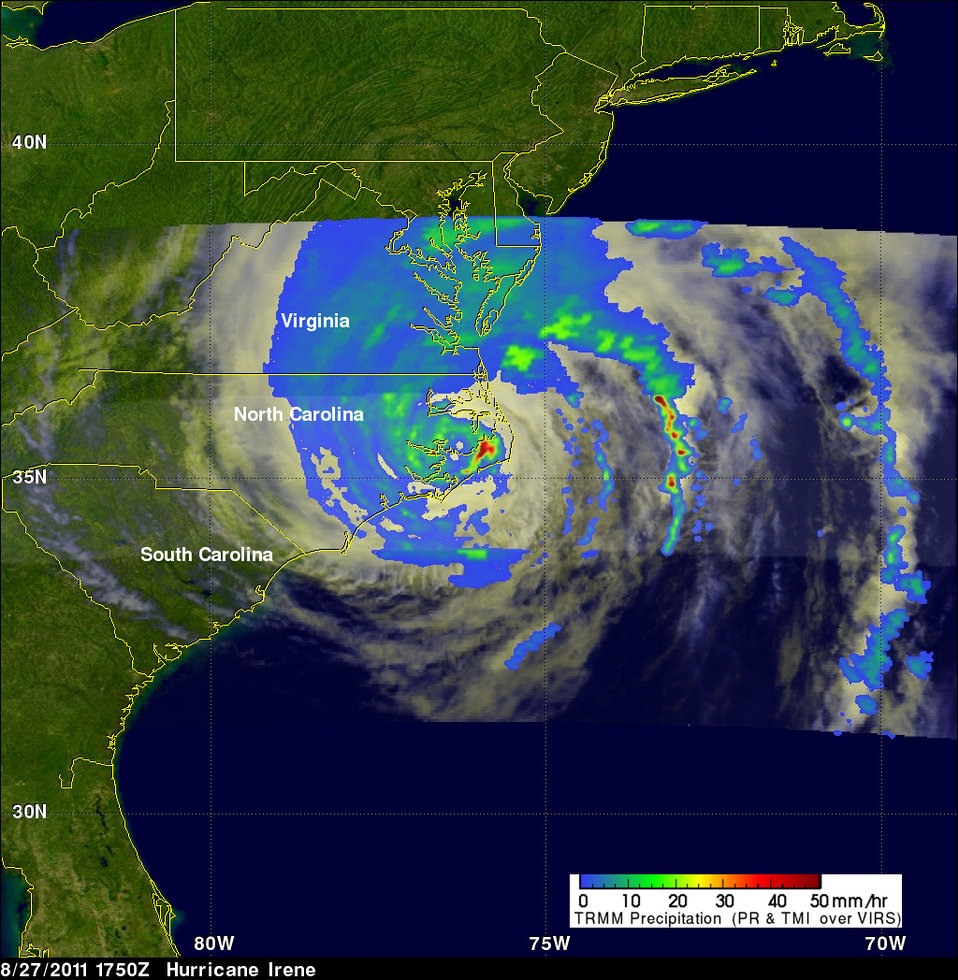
National Aeronautics and Space Administration, (NASA): Hurricanes/Tropical Cyclones